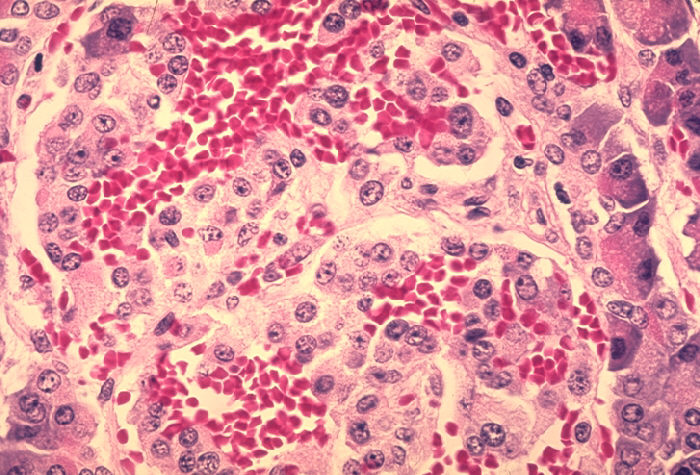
Histopathology of pancreas in fatal human plague.